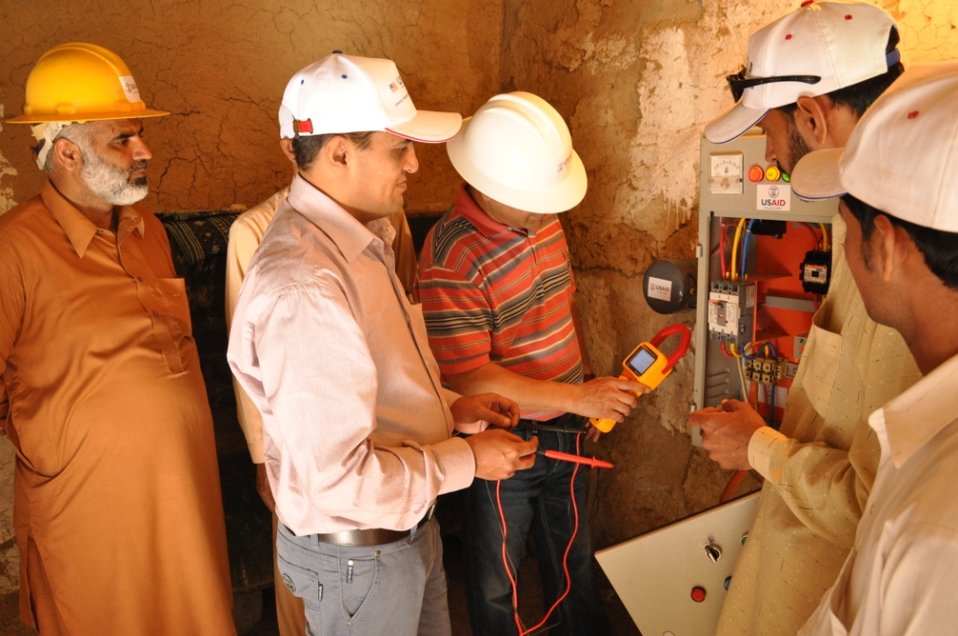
Usaid To Provide Technical Assistance To Improve Efficiency Of Tube-Wells In Iesco By Installing 2600 Lt Capacitors at Islamabad on April 26, 2012